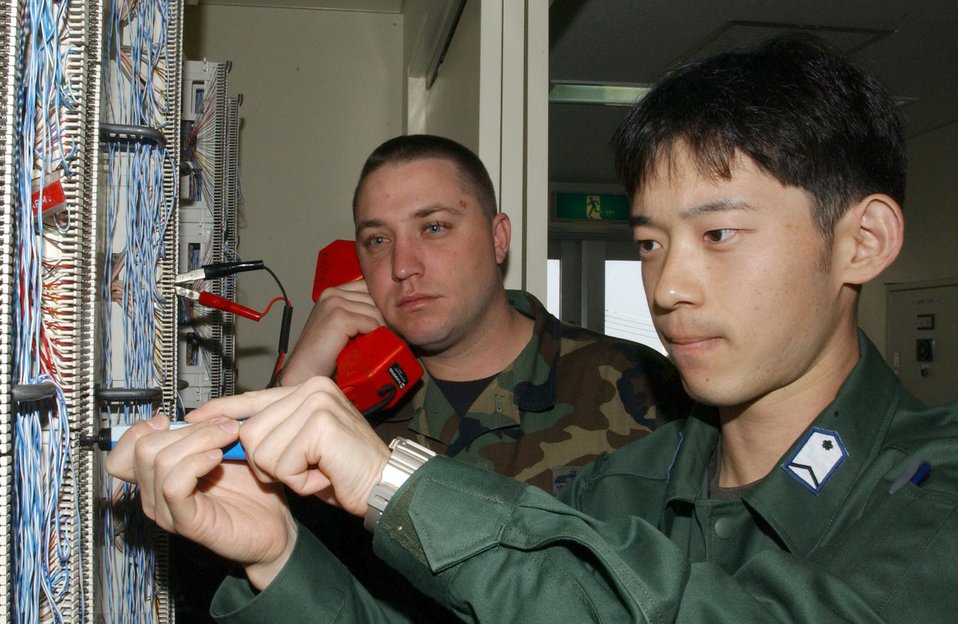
Japanese Airmen

Staff Sgt. Shigeru Kuzuhara (right), of the Japan Air Self-Defense Force, and Air Force Staff Sgt. Glen Young, 18th Communications Squadron, troubleshoot a telephone system problem. Sergeant Kuzuhara is one of seven Japanese NCOs who visited Kadena Air Base, Japan, March 13 to 23 as part of the JASDF-U.S. Air Force Bilateral Exchange Program. The exchange program is designed to enhance NCO relationships, share culture and professional military ideas, and gain a better understanding of allied operations.